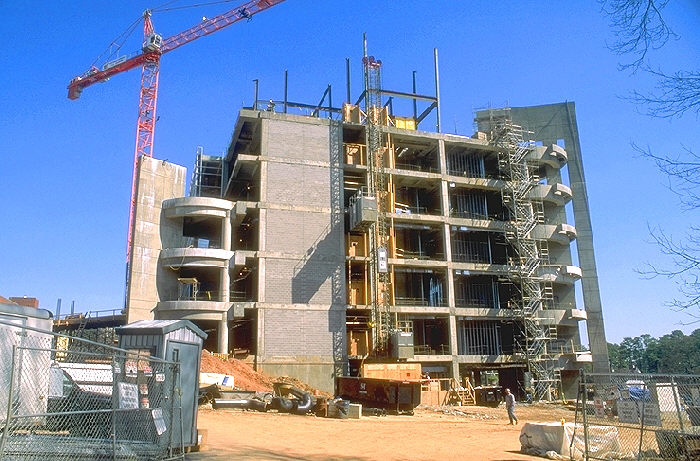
On the Centers for Disease Control's (CDC) Roybal Campus, located in metropolitan Atlanta, Georgia, this March, 1999 image depicts the intermediate phases of construction of Building 17.